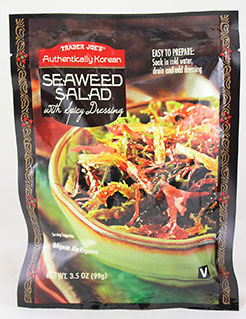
97677-SeaweedSaladweb